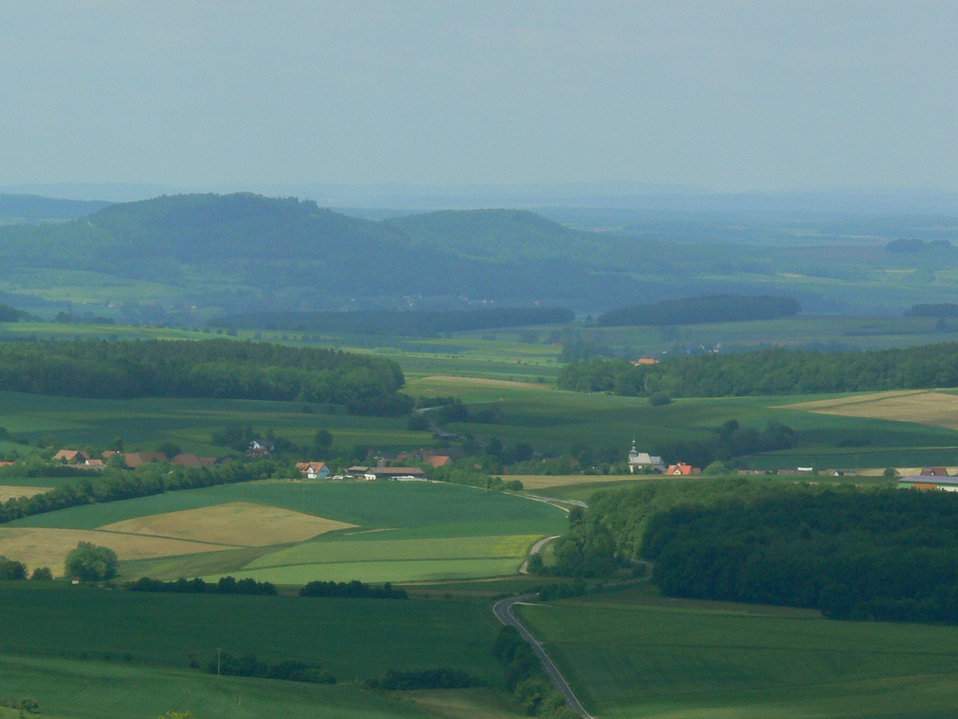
051 Scheßlitz, Banzer Berge